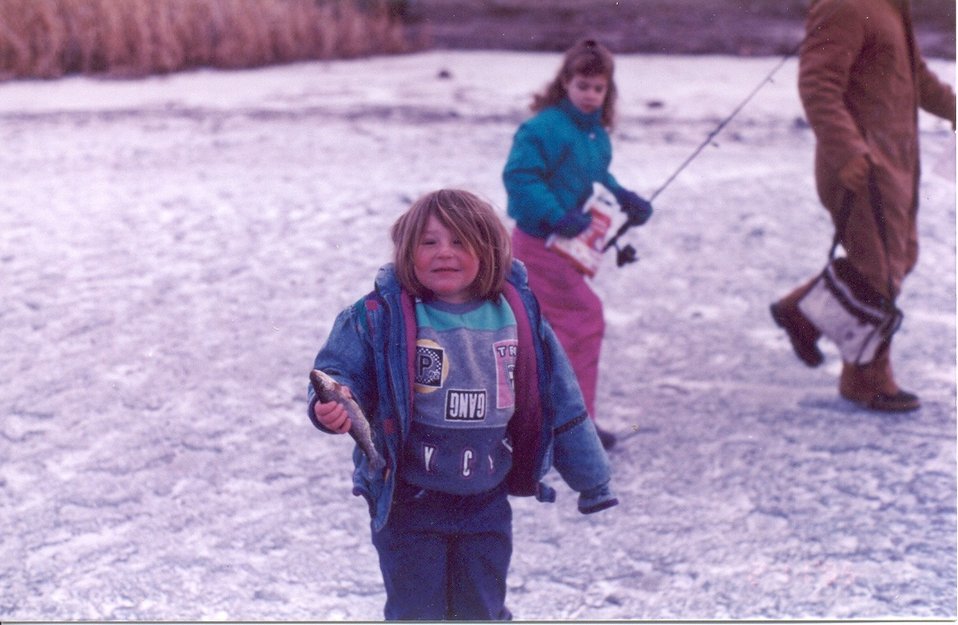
Ice Fishing Derby Salmon Idaho Salmon Field Office UCSC Upper Columbia Salmon Clearwater District